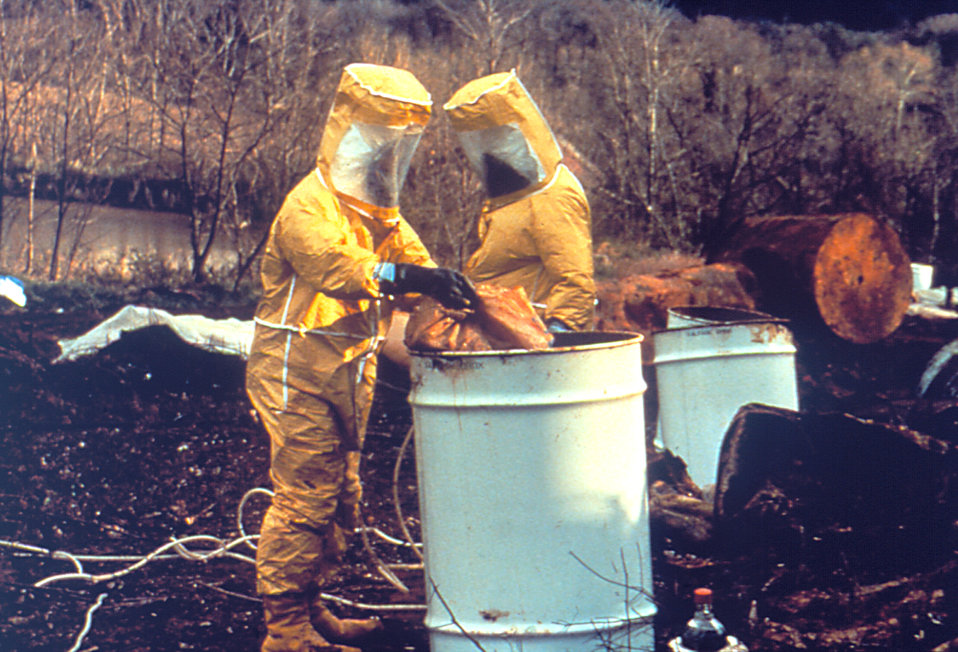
Protective Clothing.